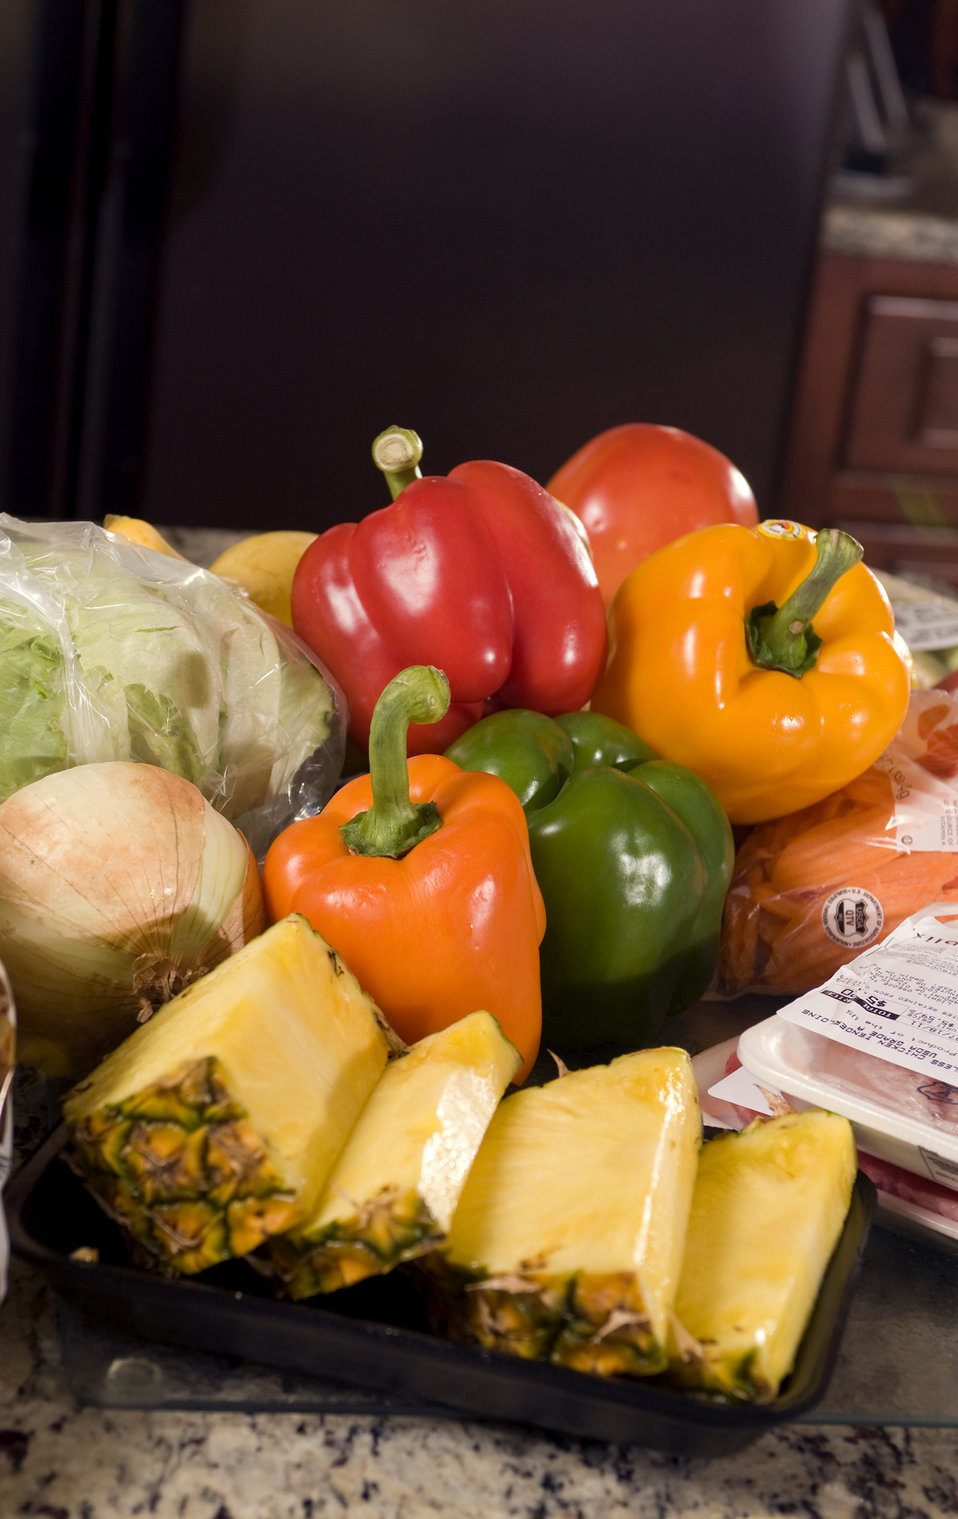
Fresh groceries

This kitchen setting still life of newly-purchased groceries, includes four bell peppers, i.e., red, yellow, green, orange, a bag of pre-sliced carrots, fresh-sliced pineapple, a sweet onion, a head of iceberg lettuce, a tomato, and two packages of meat.